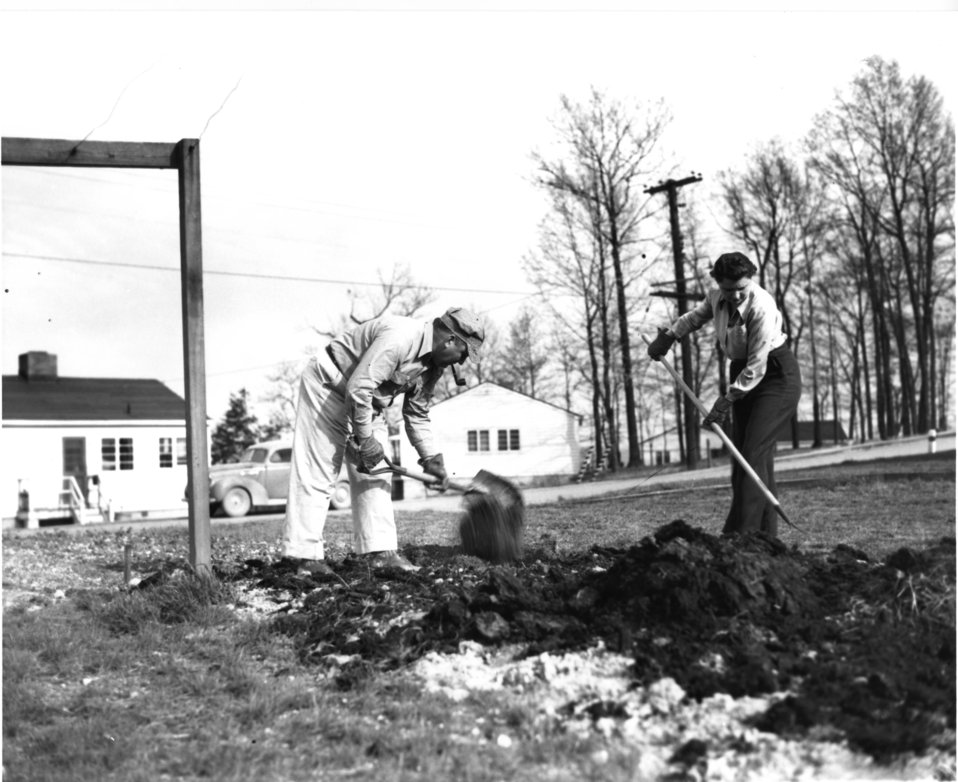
Daily Life at Oak Ridge